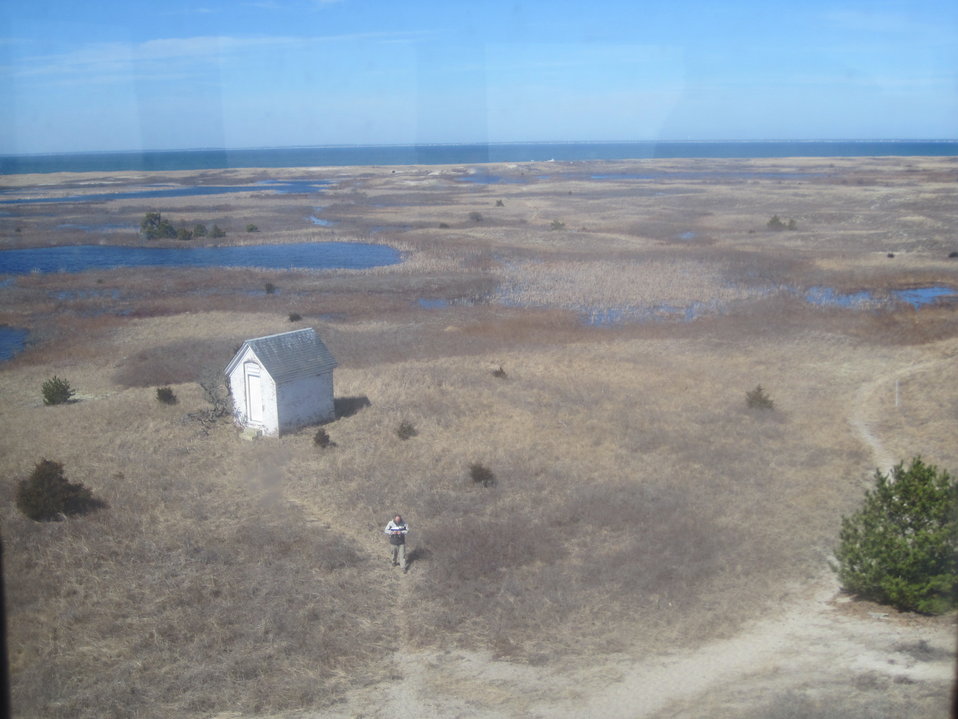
View from the lighthouse

The entire south island is visible from atop the lighthouse.

Credit: Keith Shannon/USFWS

Monomoy National Wildlife Refuge is part of the Eastern Massachusetts National Wildlife Refuge Complex.